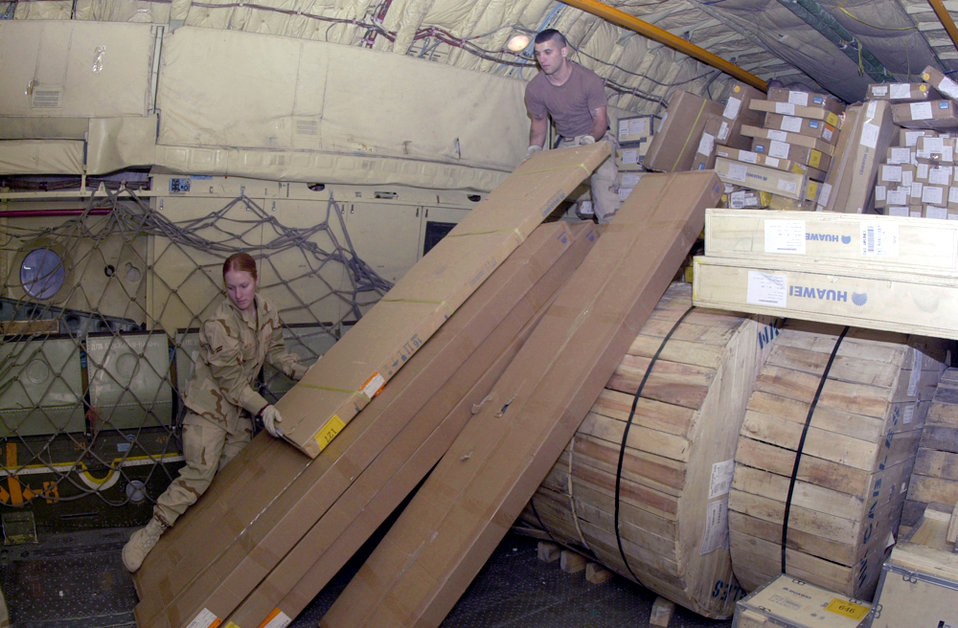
You can hear me soon

KIRKUK AIR BASE, Iraq -- Airmen 1st Class Jenna Welsh (left) and Cody Vice offload telecommunications equipment Nov. 17 from a commercial IL-76 cargo aircraft here. Almost 1,000 pieces of telecommunications equipment was unloaded by hand during two trips to the base. The equipment will be sent to the city of Kirkuk to establish northern Iraq's first cellular telephone network. Both airmen are assigned to the 506th Expeditionary Logistics Readiness Squadron.